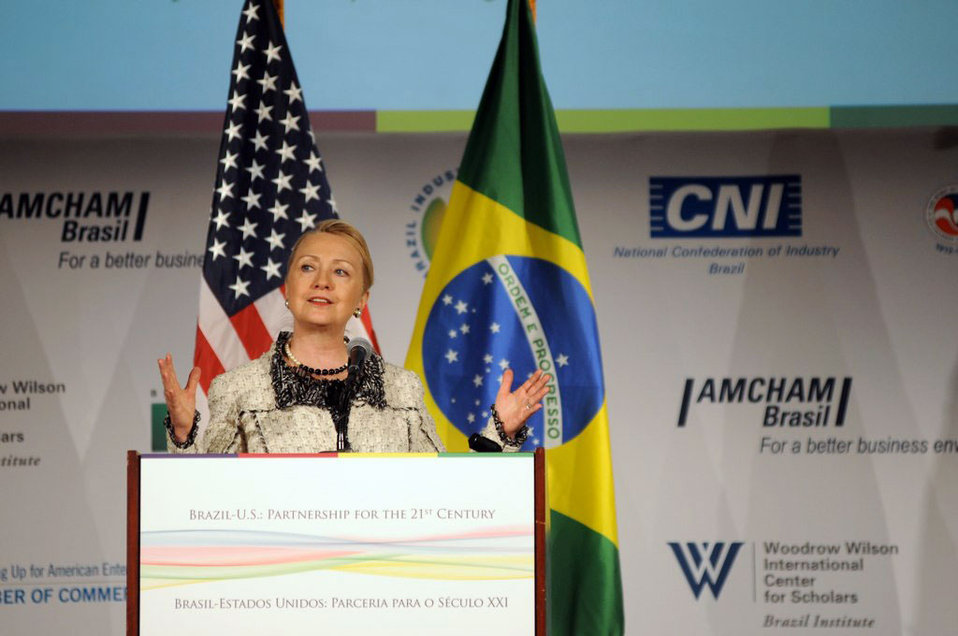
Secretary Clinton Delivers Remarks on U.S.-Brazil Partnership

U.S. Secretary of State Hillary Rodham Clinton delivers the opening remarks at the Brazil-U.S.: Partnership for the 21st Century event, a day-long conference hosted by the Government of Brazil at the U.S. Chamber of Commerce in Washington, D.C., on April 9, 2012.